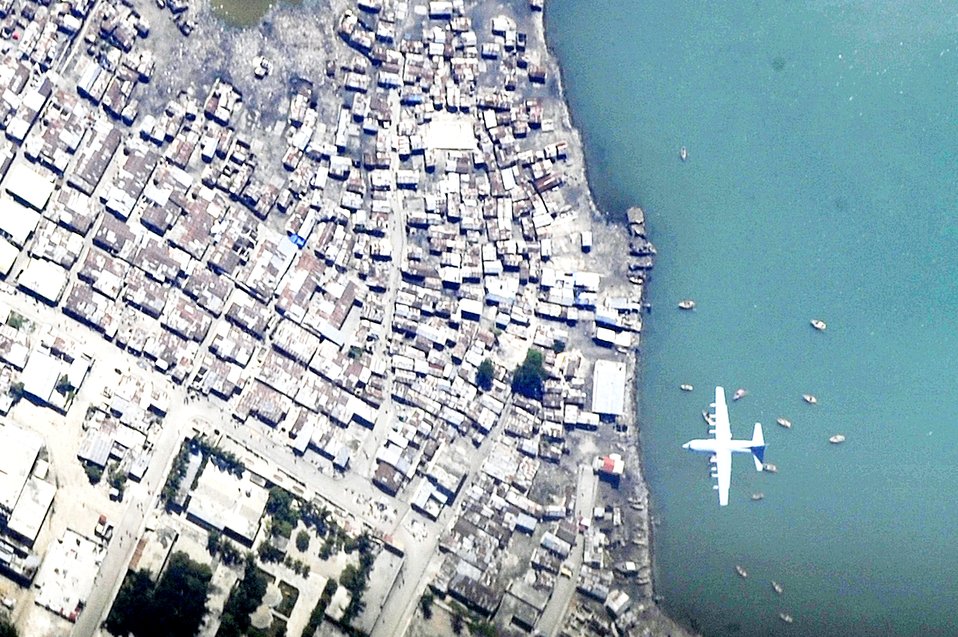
OC-135 crews assist from 15,000 feet

A C-130 Hercules makes its final approach into Toussaint L'Ouverture International Airport at Port-au-Prince, Haiti, Jan. 16, 2010, as viewed by the OC-135B Open Skies aircraft. The OC-135B used 10,000 feet of film to photograph the devastation caused by a 7.0-earthquake at an altitude of 15,000 feet.